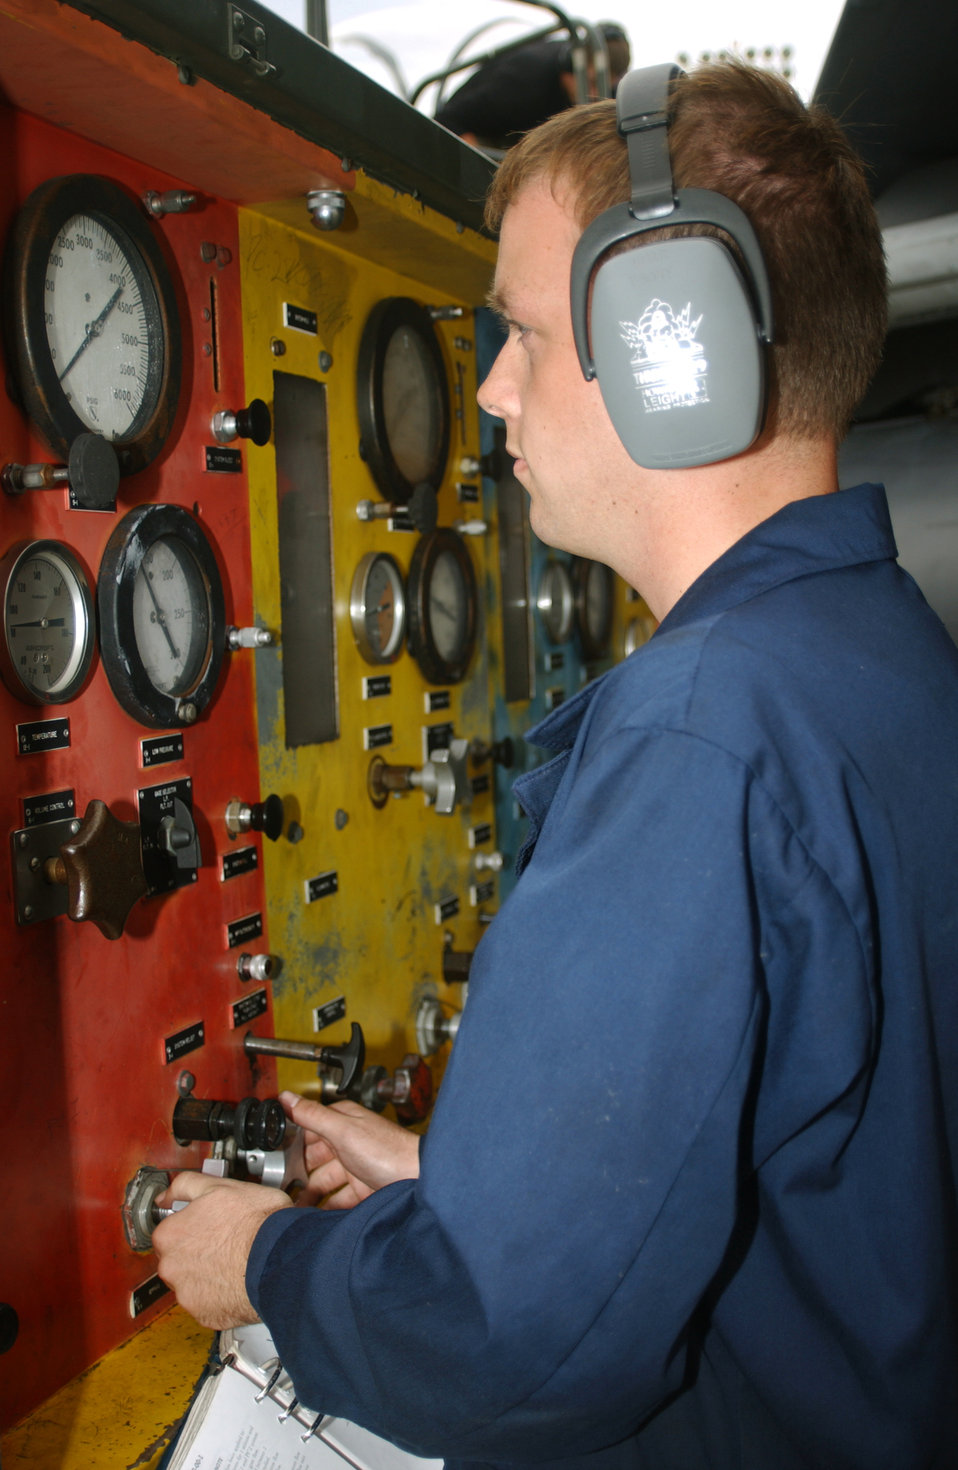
Refueling operations

SEYMOUR JOHNSON AIR FORCE BASE, N.C. -- Senior Airman Daniel Schaaf performs an in-flight refueling operations check during an operational readiness exercise here Oct. 27. Airman Schaaf is assigned to the 336th Aircraft Maintenance Unit.